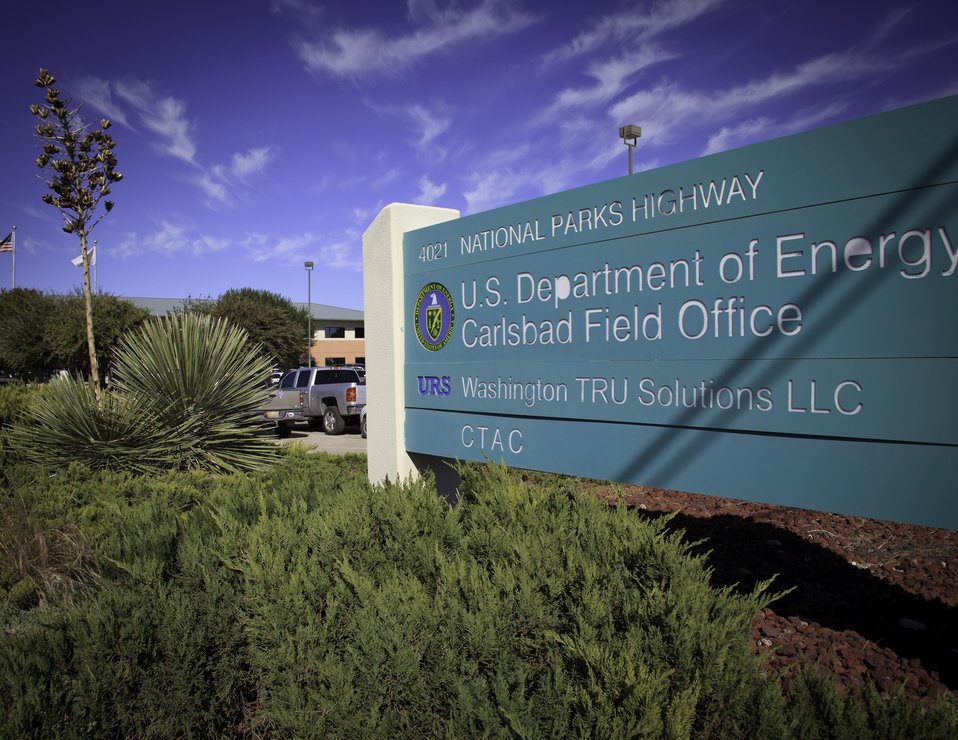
EM Analytical Services Program Reports Success in First Year of Comeback

The National Analytical Management Program (NAMP) offers a centralized hub for analytical resources within the DOE complex. The program assists in the standardization of methods and provides a mechanism to coordinate receipt and analysis of samples from outside agencies. NAMP also establishes reimbursement mechanisms for services.